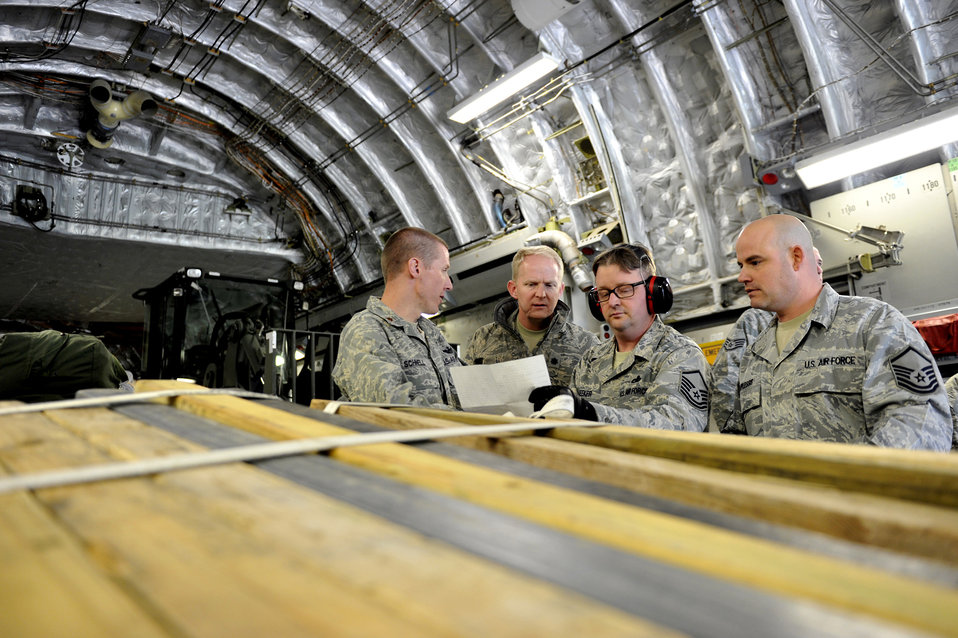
621st CRW readies Romania airport for U.S. multi-modal shipments

Maj. Matthew Schnell, Lt. Col. Lee Wingfield, Master Sgt. John Meeker, and Master Sgt. Jereck Duplessis coordinate off-load operations upon arrival May 9, 2011, at Mihail Kogalniceanu Air Base, Romania. Fifty-four members of the 621st Contingency Response Wing deployed here to extend airfield capability supporting multi-modal operations during a U.S. Transportation Command proof-of-principle evaluation. The process is expected to demonstrate the feasibility of using the air base as a hub for equipment flowing into and out of Afghanistan. Major Schnell, Colonel Wingfield, Sergeants Meeker and Duplessis are assigned to the 621st Contingency Response Element.